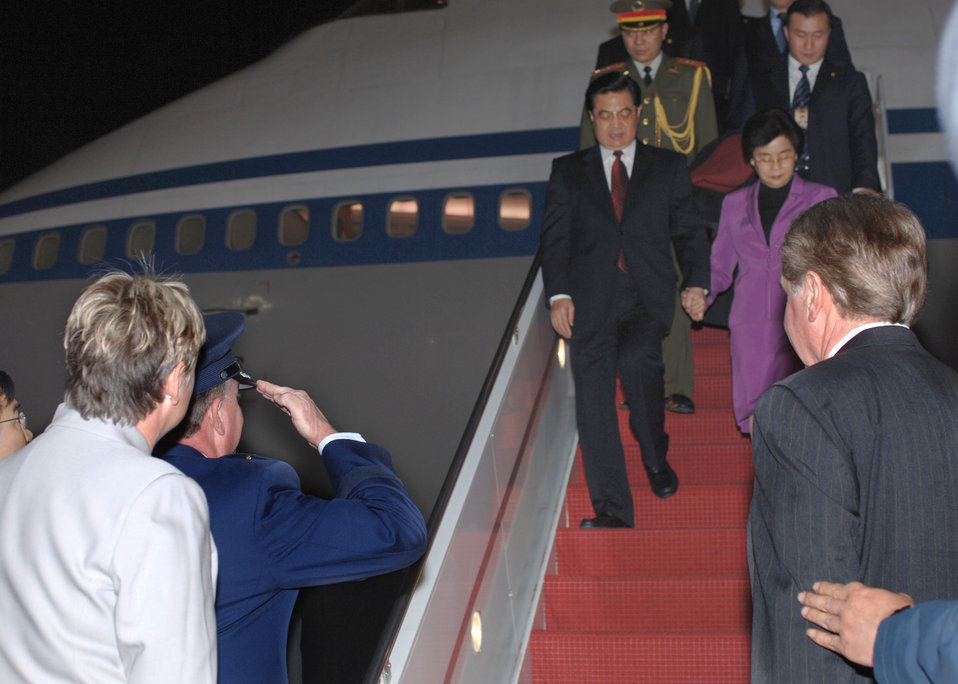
China's president visits U.S.

President Hu Jintao of China is greeted as he arrives at Andrews Air Force Base, Md., Thursday, April 19, 2006.